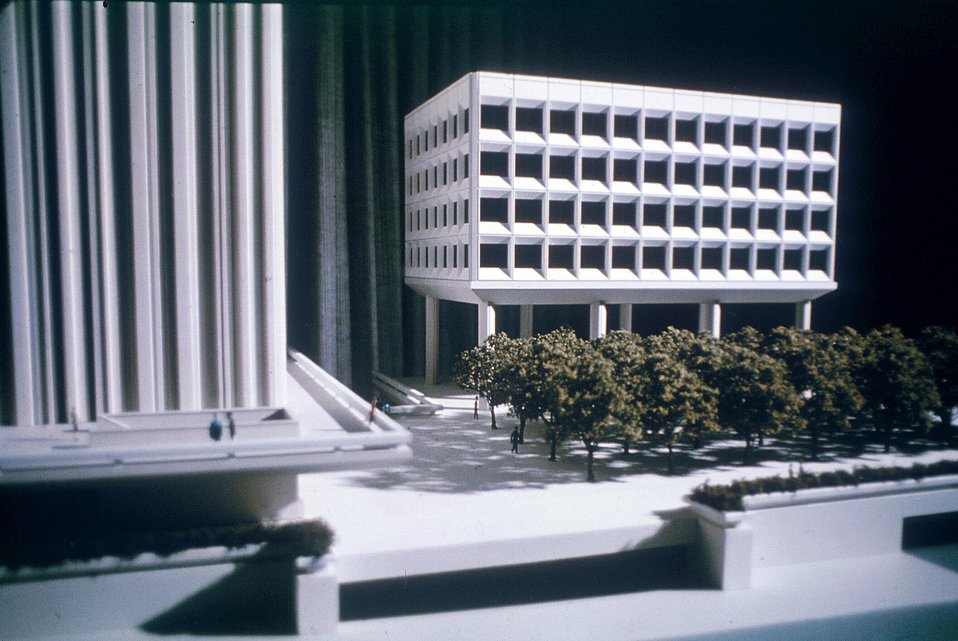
Federal Office building No. 5 Washington DC